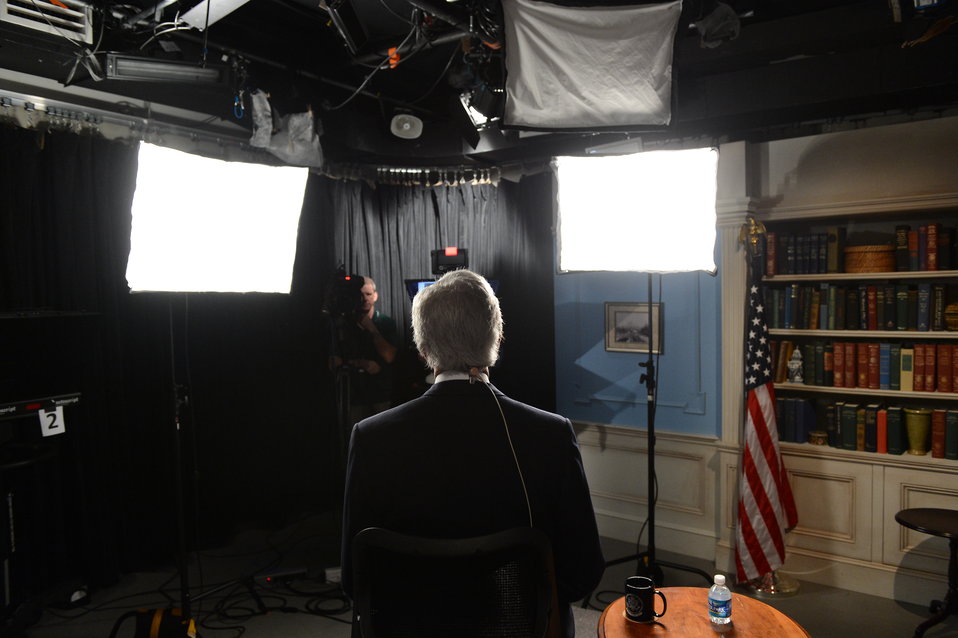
Secretary Kerry Prepares for his Google Hangout

U.S. Secretary of State John Kerry prepares for his Google Hangout with NBC's Andrea Mitchell at the U.S. Department of State in Washington, D.C., on May 10, 2013.